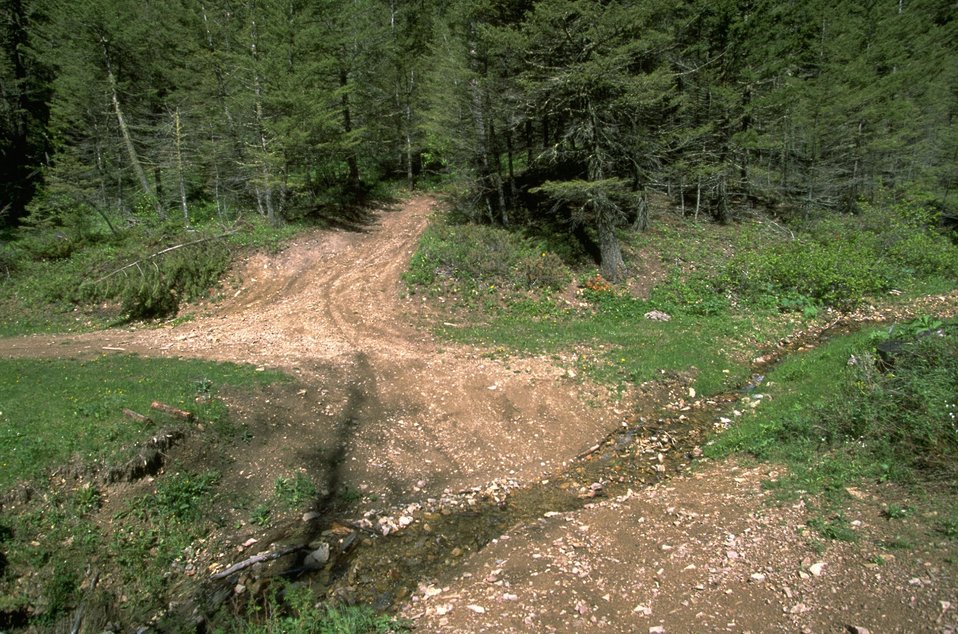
Damaged roads crossing a stream in the Judith Mountains